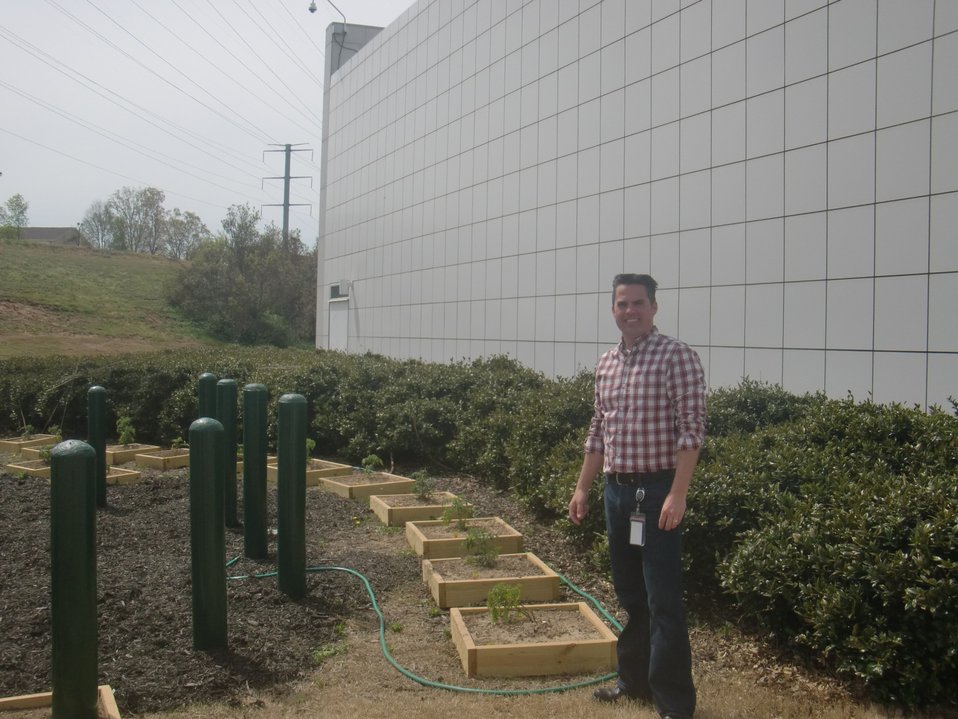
Rob Richards, Director of Archival Operations, in Archives garden; Location: National Archives at Atlanta, Morrow, GA